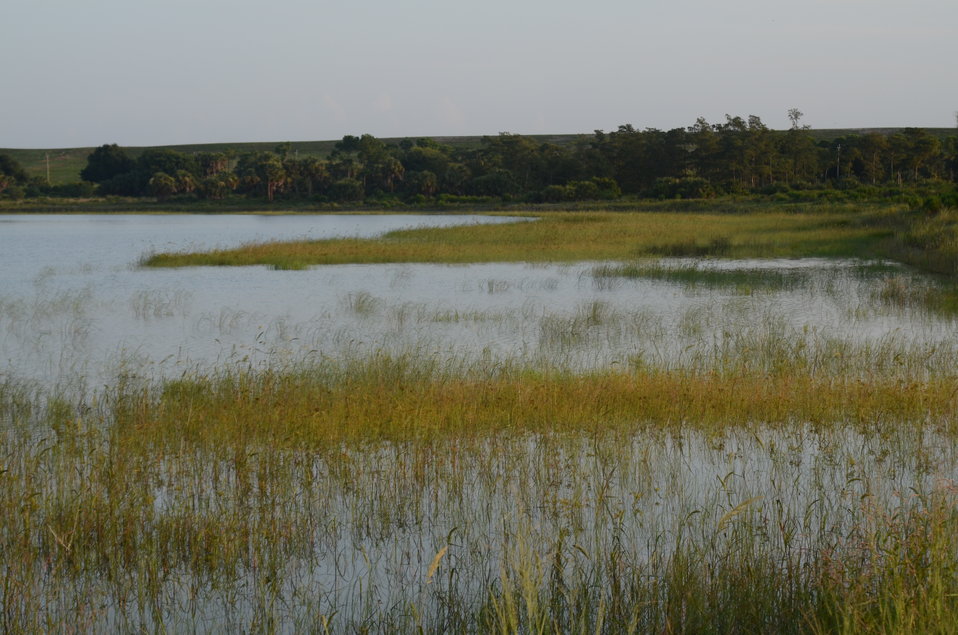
Agriculture Secretary Tom Vilsack today announced $100 million in financial assistance to acquire permanent easements from eligible landowners in four counties and assist with wetland restoration on nearly 24,000 acres of agricultural land in the Northern Everglades Watershed, FL, on Thursday, August 8, 2011.